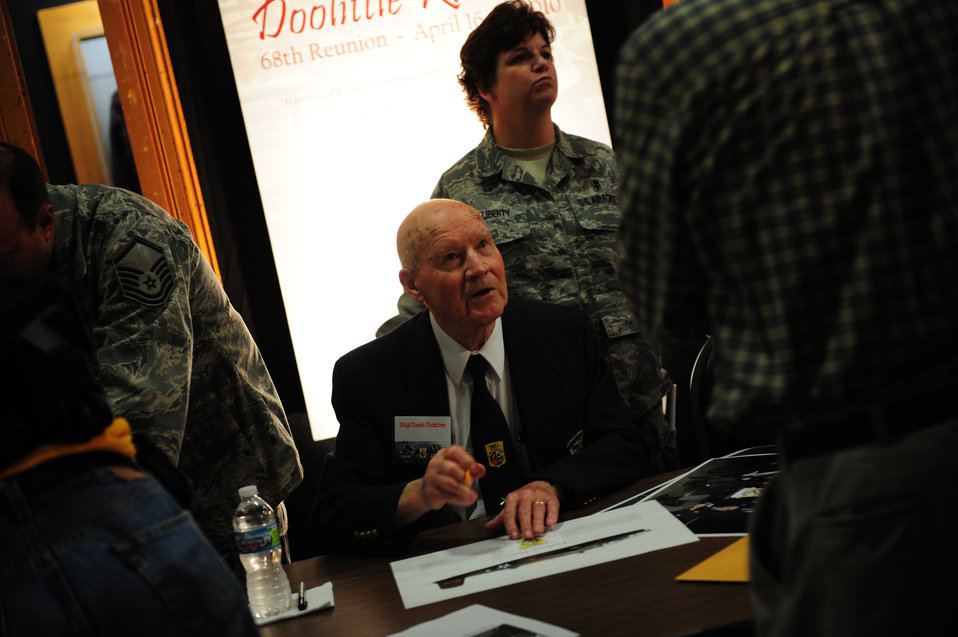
68th Doolittle Raiders Reunion

U.S. Air Force Master Sgt. (ret.) David J. Thatcher (seated), engineer-gunner of the seventh B-25 Mitchell Bomber that took part in the Doolittle Tokyo Raid, attends an autograph session at the National Museum of the U.S. Air Force at Wright Patterson Air Force Base, Ohio, April 16, 2010. The Doolittle Raiders' 68th reunion commemorates the anniversary of the Doolittle Tokyo Raid. On April 18th, 1942, U.S. Army Air Forces Lt. Col. Jimmy Doolittle's squad of 16 B-25s bombed targets in response to the Japanese attack on Pearl Harbor.